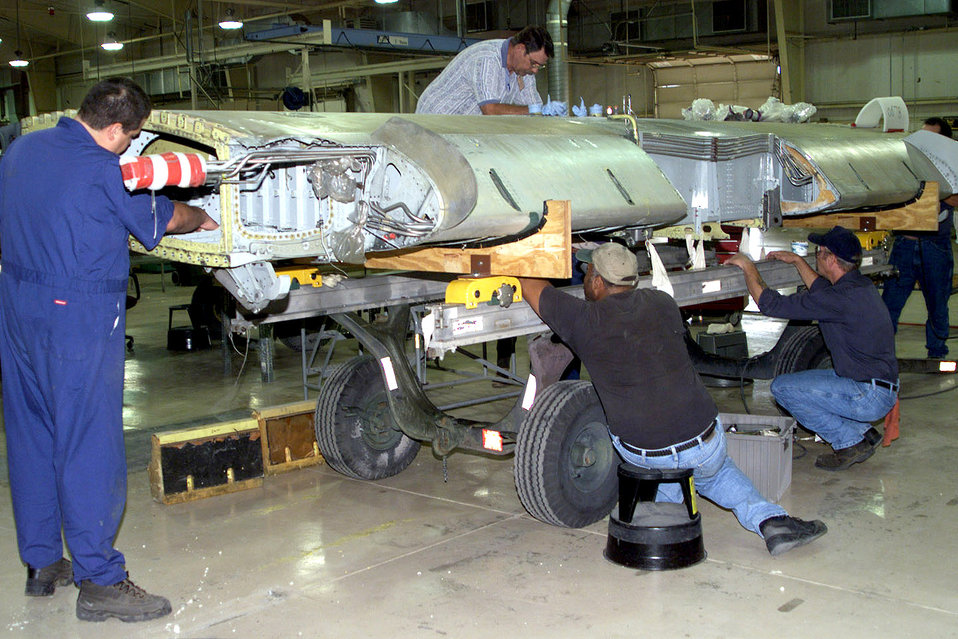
Fresh wings

DAVIS-MONTHAN AIR FORCE BASE, Ariz. -- Aerospace Maintenance and Regeneration Center technicians here inspect and modify the internal and external structure of an A-10 Thunderbolt II wing. The rejuvenated wings help to extend the flying lifespan of the aircraft.